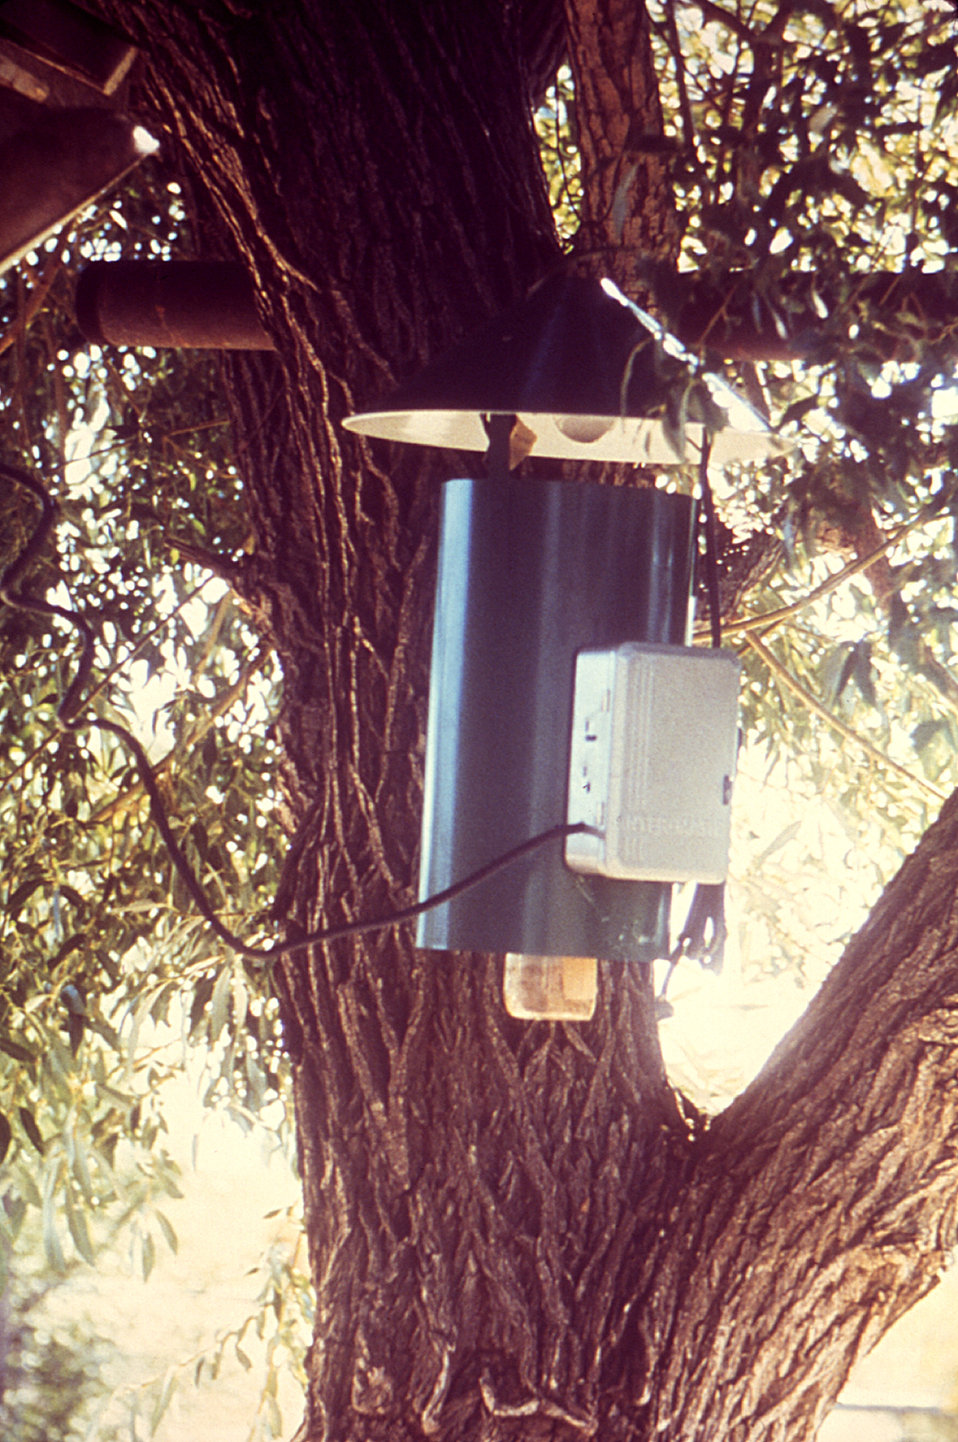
This 1973 photograph depicted a New Jersey-type light trap, equipped with a timer that was being used for trapping mosquitoes in Colorado during a field study to determine the presence of vector populations of that region.